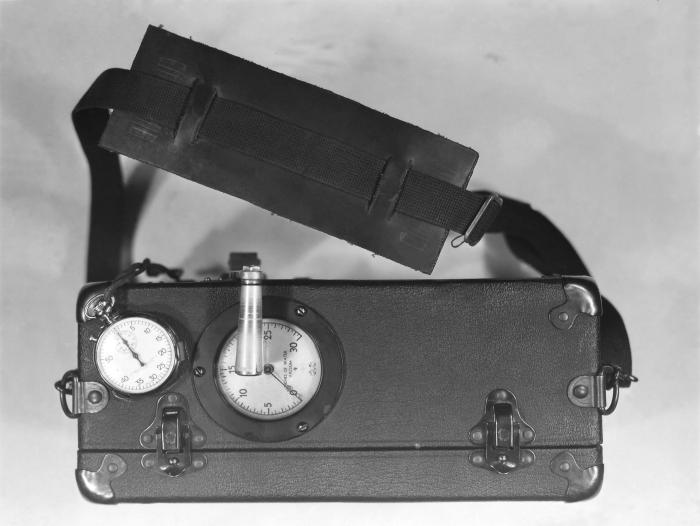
From 1950, this historical photograph was provided by the Center for Disease Control's (CDC), National Institute for Occupational Safety and Health (NIOSH). Reprinted from the January, 1951, 'Industrial Hygiene Newsletter', it depicted the exterior case of a vapor-monitoring device. The device was a Midget Impinger� pump. A stopwatch sat to the left, atop the apparatus case. Impingers are tubes, usually made from glass or fluoropolymer material, and are designed to collect airborne hazards by bubbling collected gas samples through a liquid medium, which is then analyzed for the presence of deposited contaminants.